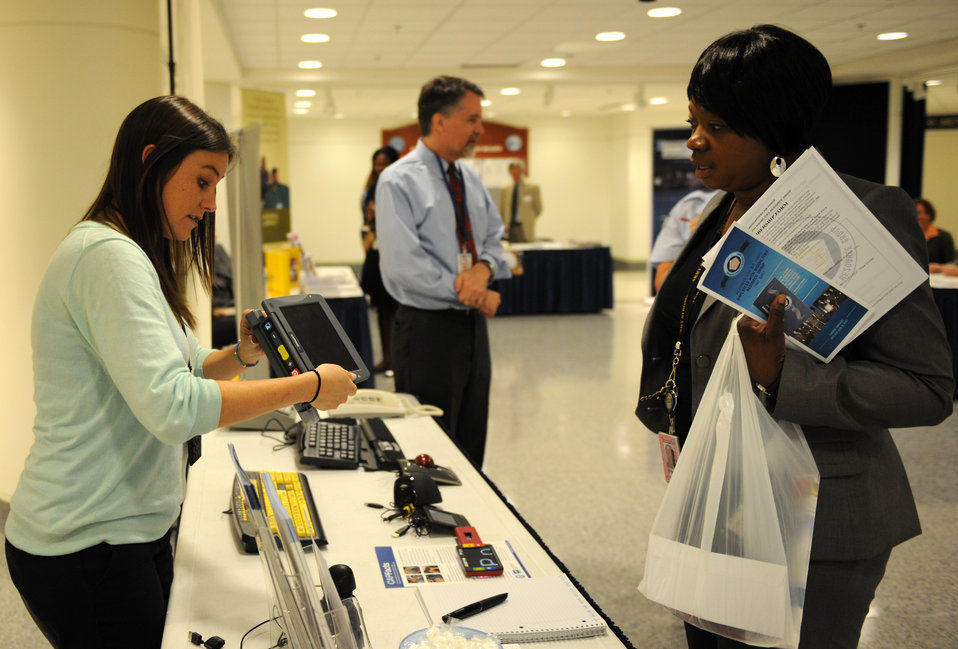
Diversity

Erin Anderson demonstrates a product to Veronica Hayes at an event held by the Headquarters Air Force to recognize National Disability Employment Awareness Month at the Pentagon on Oct. 1. The intent of the event was to educate Air Force employees and managers on various aspects of Disability Employment and Accommodations. Anderson is a Computer/Electronic Accommodations Program (CAP) technical coordinator and Hayes is a base supply center assistant manager at Virginia Industries for the Blind.